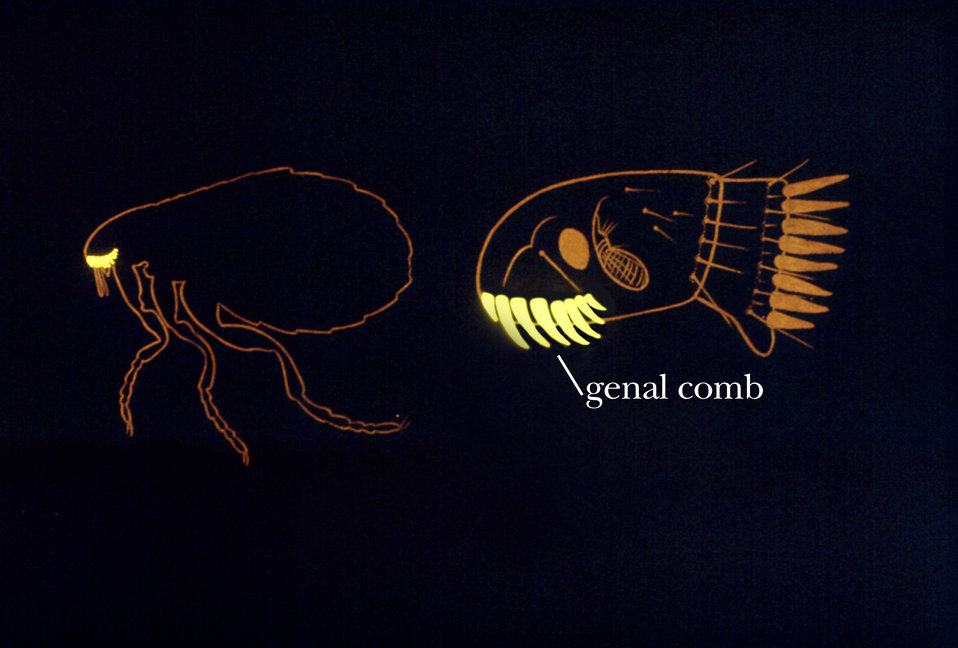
This illustration shows one of the identifying morphologic characteristics found in the head region of a flea.